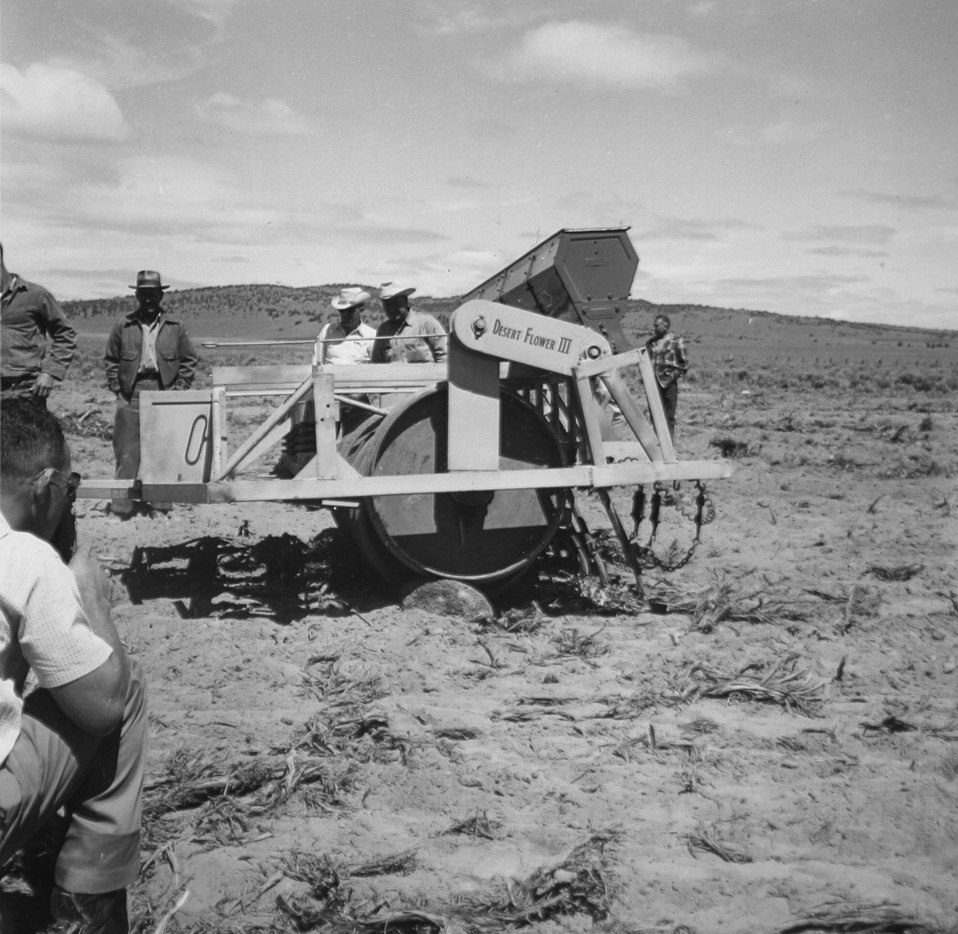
2160 8-16-60 Howard R. DeLano Demonstation of the Oregon Press Seeder. Squaw Butte experiment station. Note separate action of single pres wheel clearing rock obstruction.